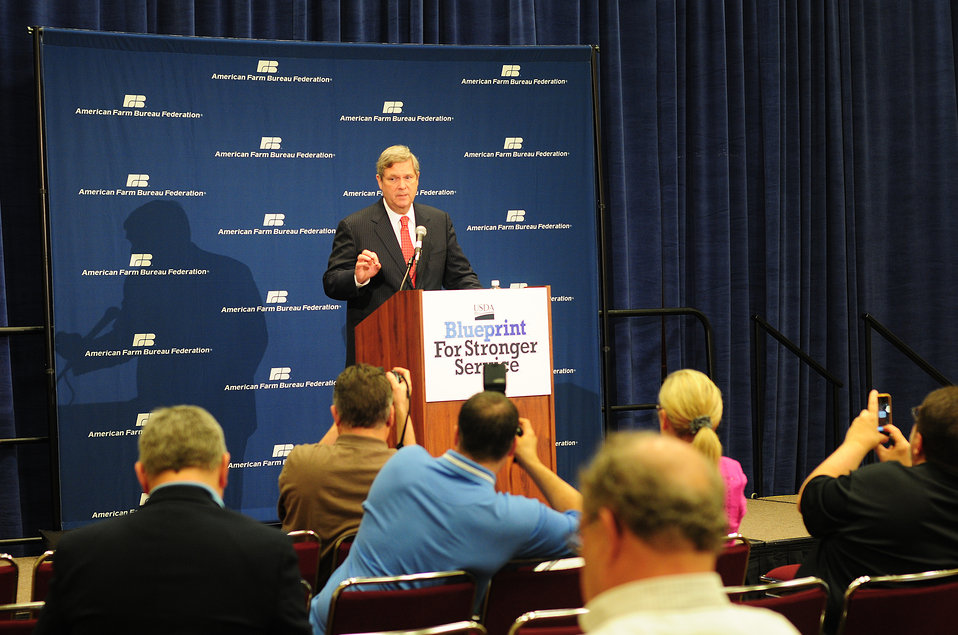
Agriculture Secretary Tom Vilsack presents USDA's Blueprint for Stronger Service, a plan to Increase Efficiency in USDA Operations, on Monday, January 9, 2012 in Honolulu, Hawaii.